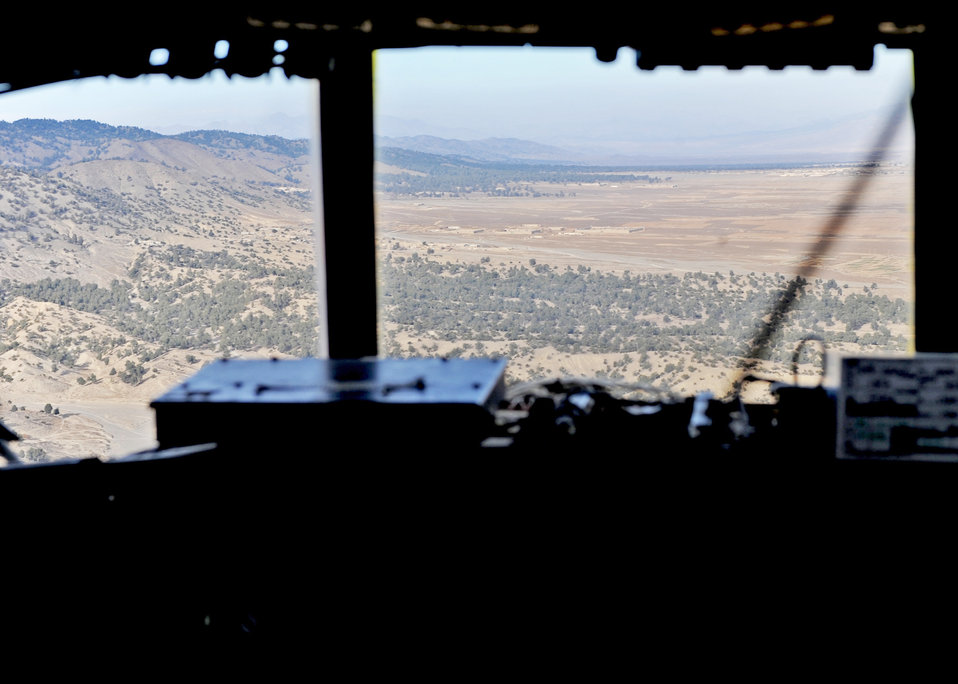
386th AEW members fly first airdrop missions in Afghanistan

An aerial view of Afghanistan can be seen from the cockpit of a C-130 Hercules assigned to the 386th Air Expeditionary Wing during the wing's first airdrop mission in Afghanistan.